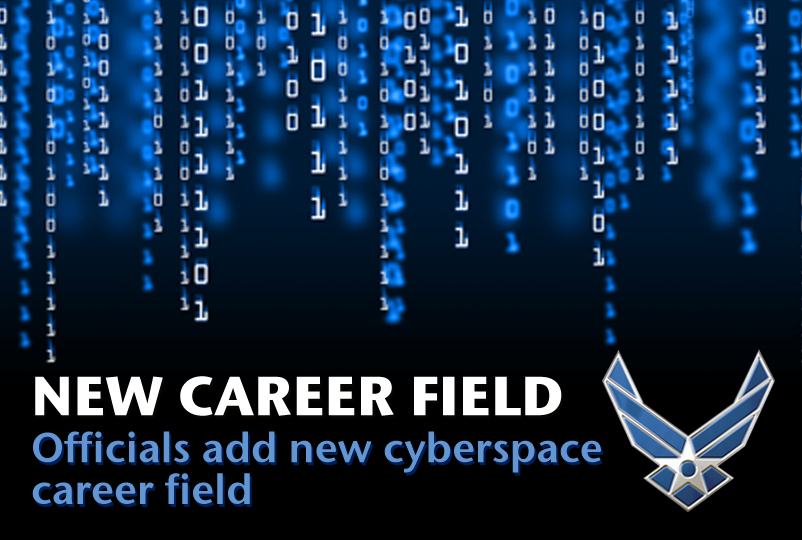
Officials stand up enlisted cyberspace defense operations career field